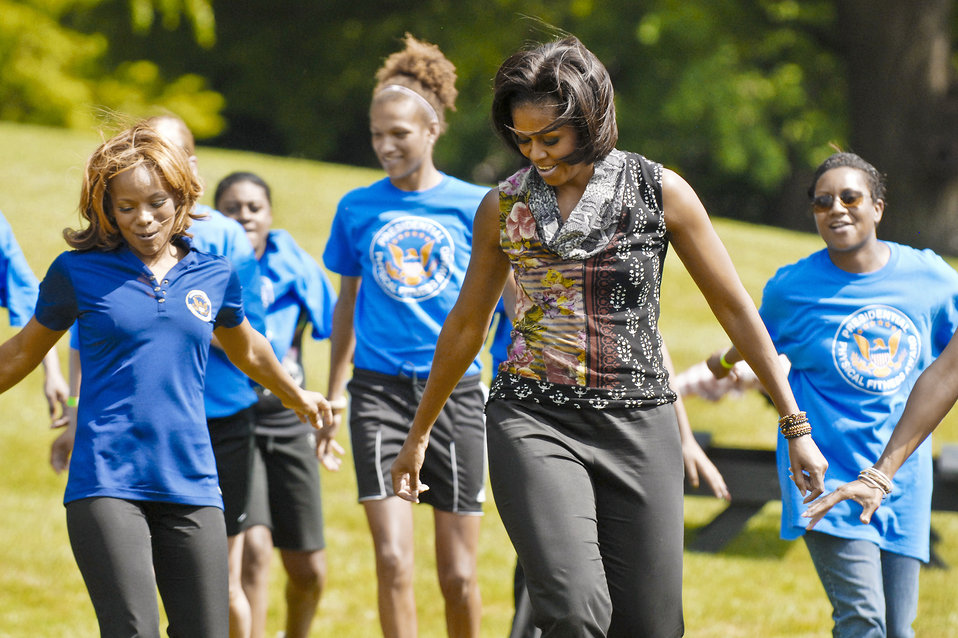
First lady invites children of Guard, Reserve to fitness event

First Lady Michelle Obama shows off her dance moves during a fitness and nutrition event May 9, 2011, at the White House. The first lady and a group of about 80 National Guard and Reserve teens tried out several fitness and nutrition stations scattered across the South Lawn.